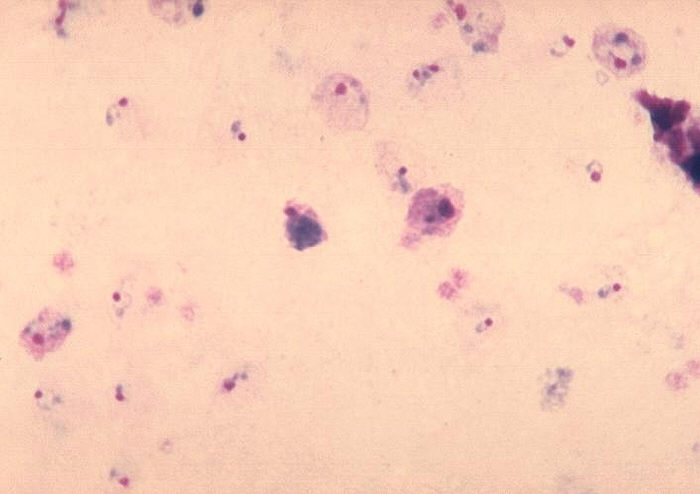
Plasmodium vivax gametocyte and mature trophozoite.